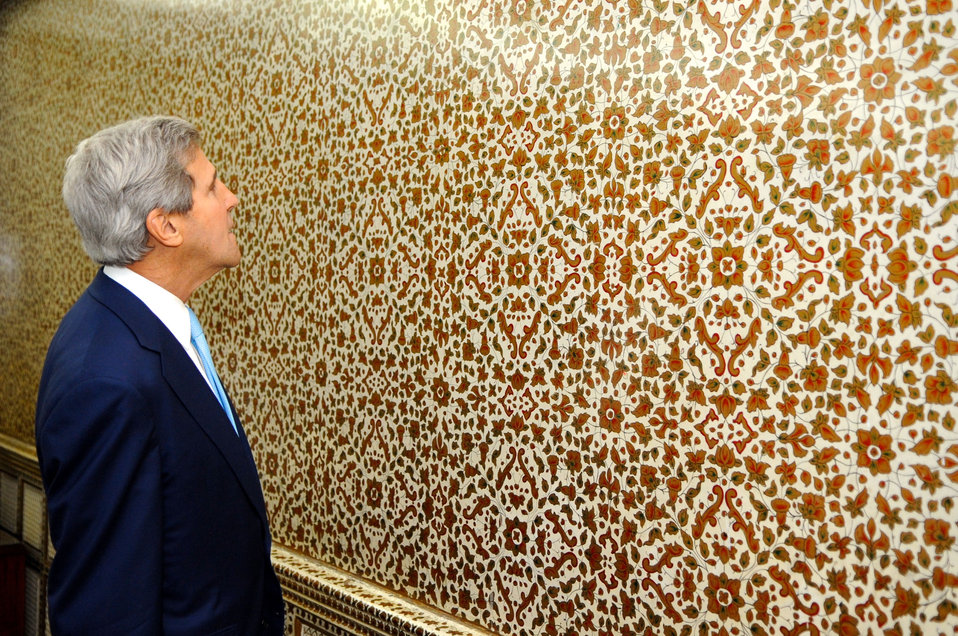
Secretary Kerry Admires a Hand-Painted Wall

U.S. Secretary of State John Kerry admires one of four hand-painted walls in a room at the Fatimah Jinnah Women's University in Rawalpindi, Pakistan, during a visit on August 1, 2013.